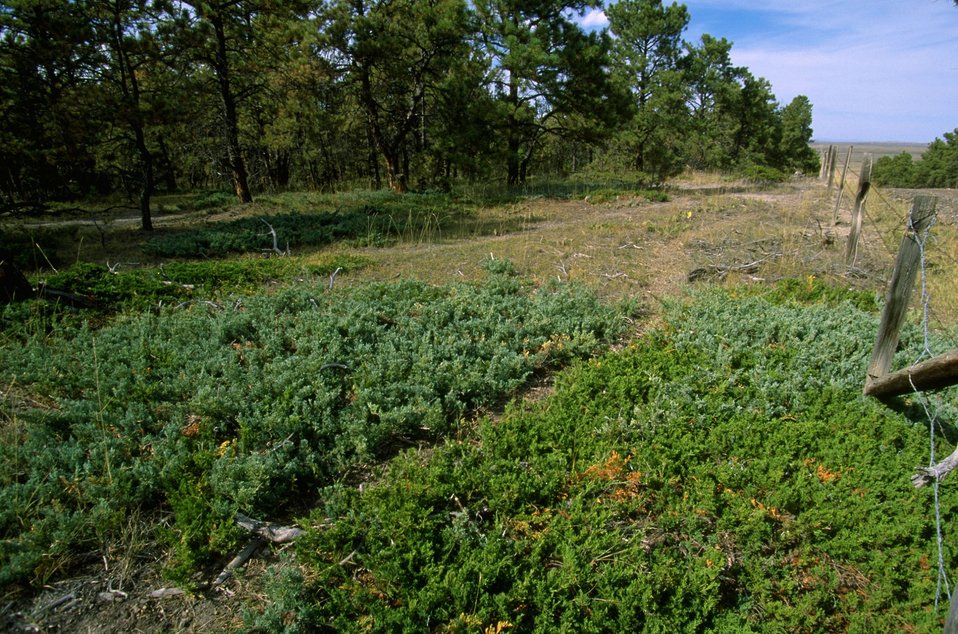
Acid Shale Area of Critical Environmental Concern (ACEC)